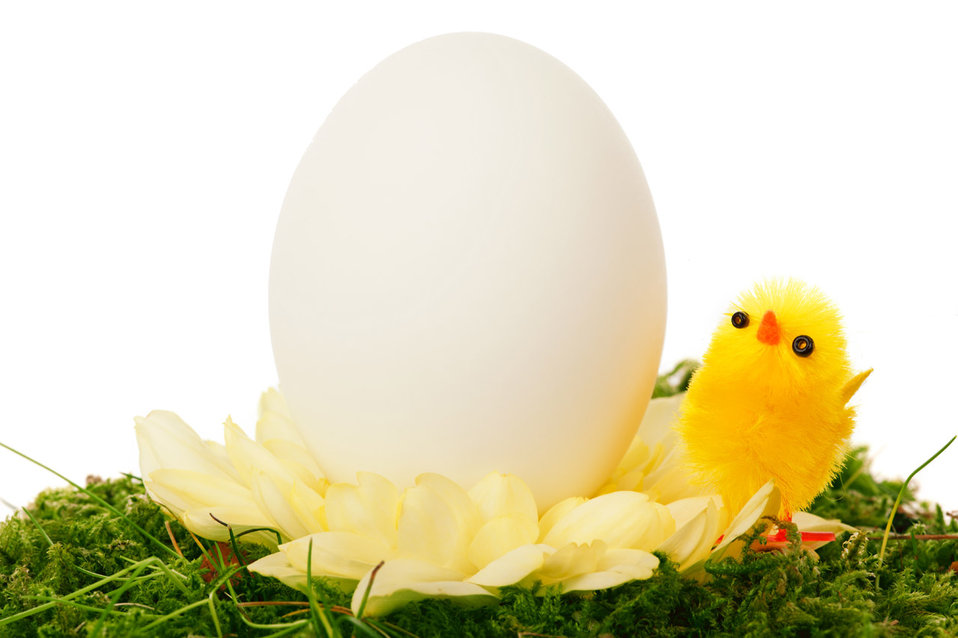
Chicken and egg

Chicken and an egg easter decoration isolated on white background.